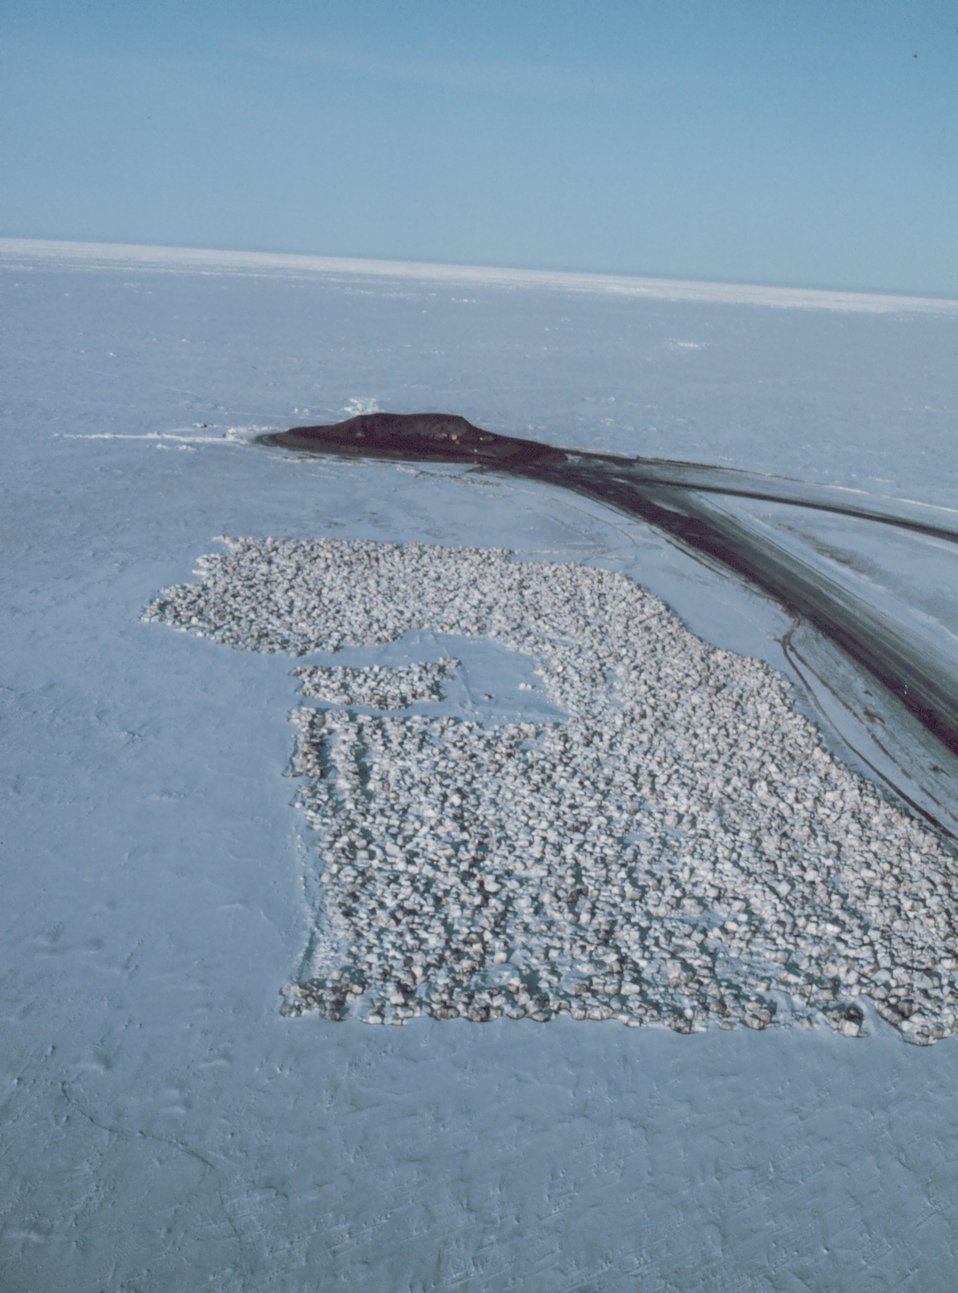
Building an artificial island in the Beaufort Sea.